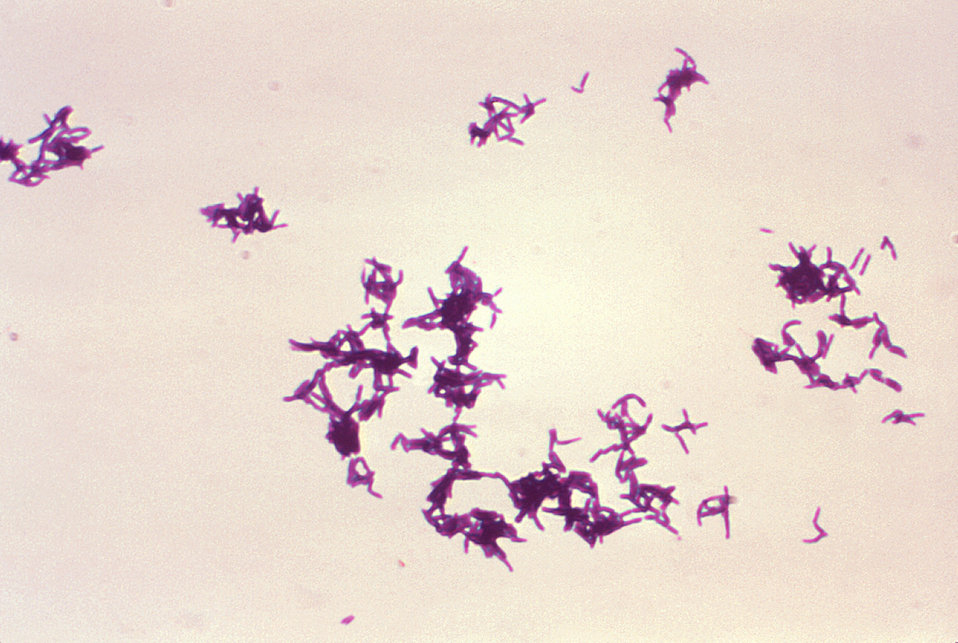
Magnified 1000X, this photomicrograph depicts a number of Gram-positive Eubacterium alactolyticum bacteria, which had been grown in Schaedler broth.